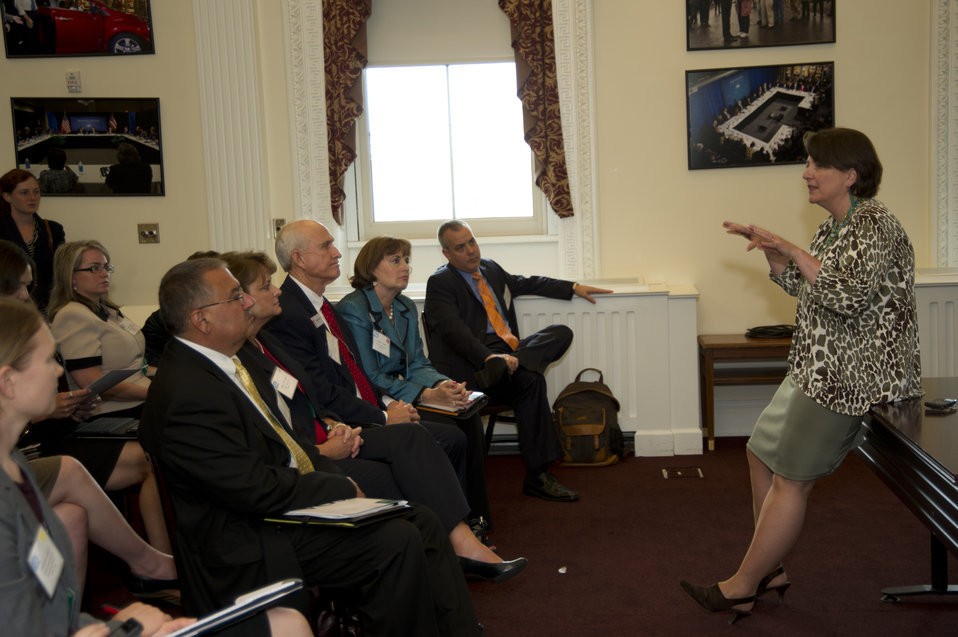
Deputy Agriculture Secretary Kathleen Merrigan speaks to the White House Forum on Regional Innovation in Rural America at the White House, Eisenhower Executive Office Building in Washington, D.C., on Wednesday, June 13, 2012.